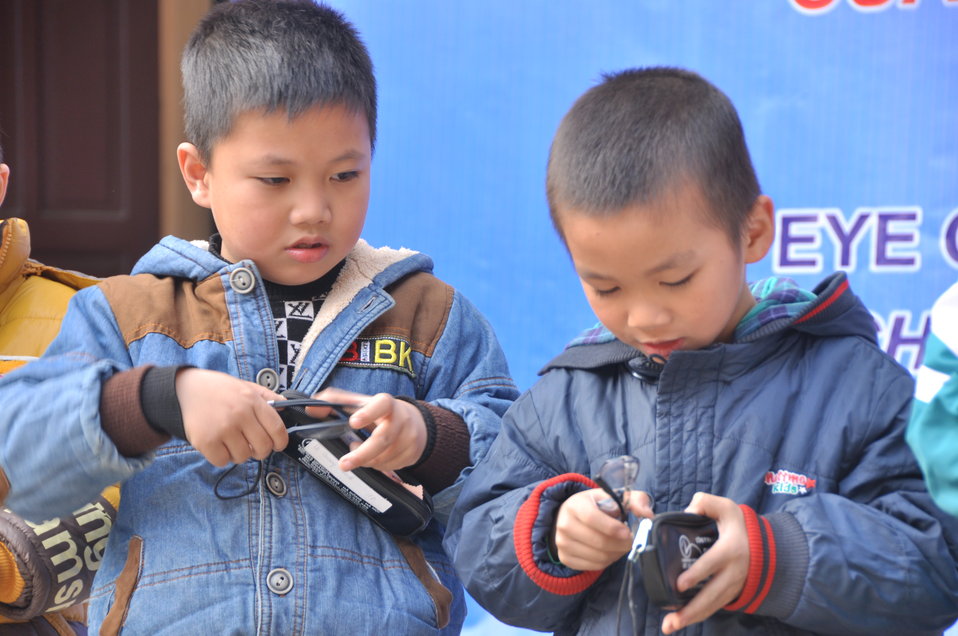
USAID supports distribution of eyeglasses to pupils and teachers in Quoc Oai, Hanoi.

Kieu Phu Junior Secondary School, Quoc Hoai, Hanoi, December 23, 2013.